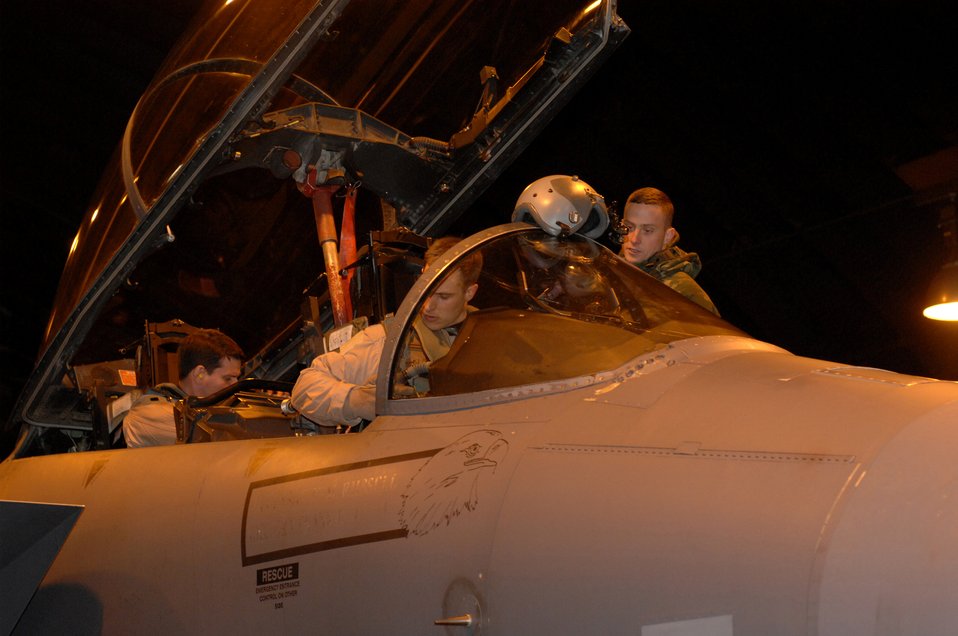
Odyssey Dawn

Maj. Lucas Teel, 492nd Fighter Squadron pilot, and Lt. Col. Clint Mixon, 492nd FS commander, secure themselves on an F-15E Strike Eagle prior to their departure from RAF Lakenheath, England, March 19, 2011. Units from the 48th Fighter Wing are currently conducting pre-deployment procedures in support of Operation Odyssey Dawn. The 48th Fighter Wing provides all-weather, day or night air superiority and air-to-ground precision combat capability as well as combat search and rescue.